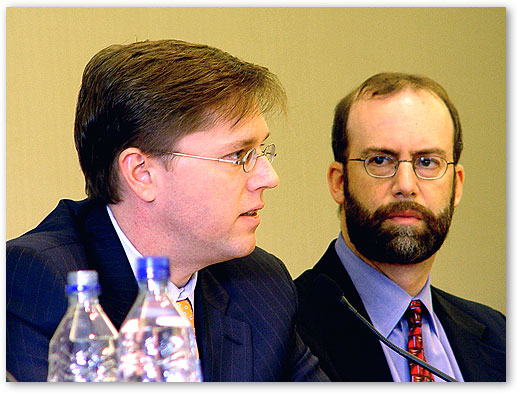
Chairman Kevin Martin and Commissioner Jonathan Adelstein.